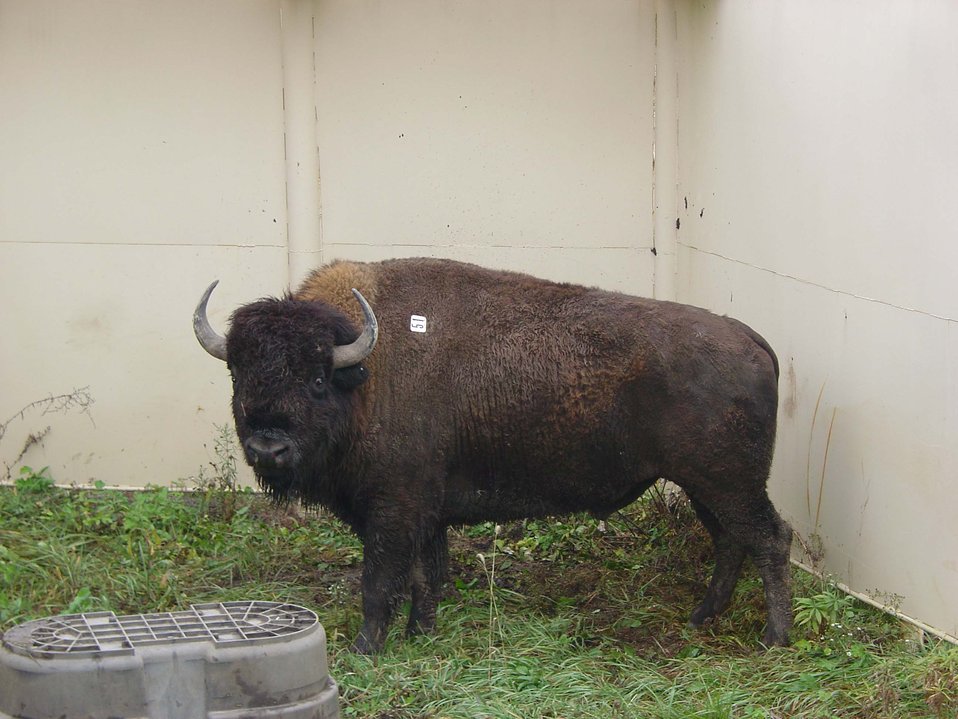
Bison in holding pen

Bison in solid walled pen with water tank turned up-side-down.